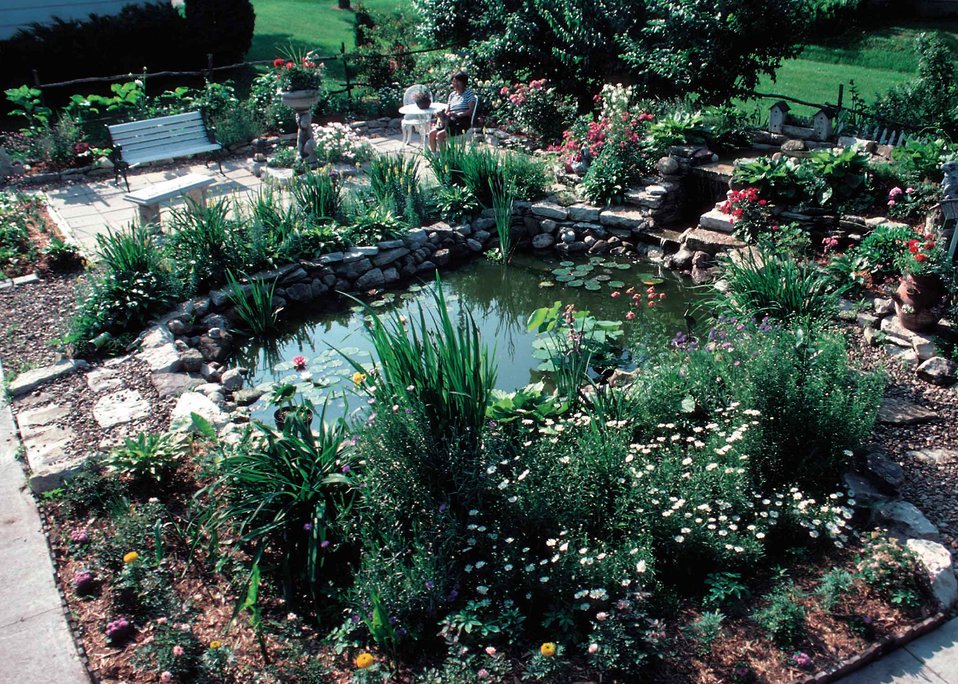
Backyard conservation work in back yard, Cantril--Van Buren County in southeastern Iowa.